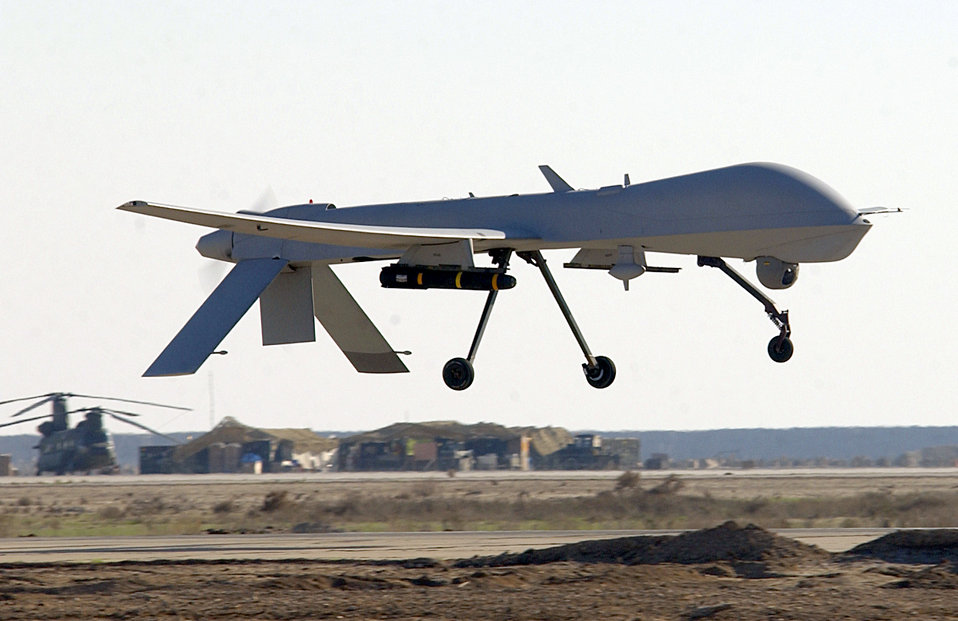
A Predator among us

TALLIL AIR BASE, Iraq -- A Predator from the 46th Expeditionary Reconnaissance Squadron here lands Jan. 20. The Predator is a remotely piloted vehicle that provides real-time surveillance imagery supporting Operation Iraqi Freedom.